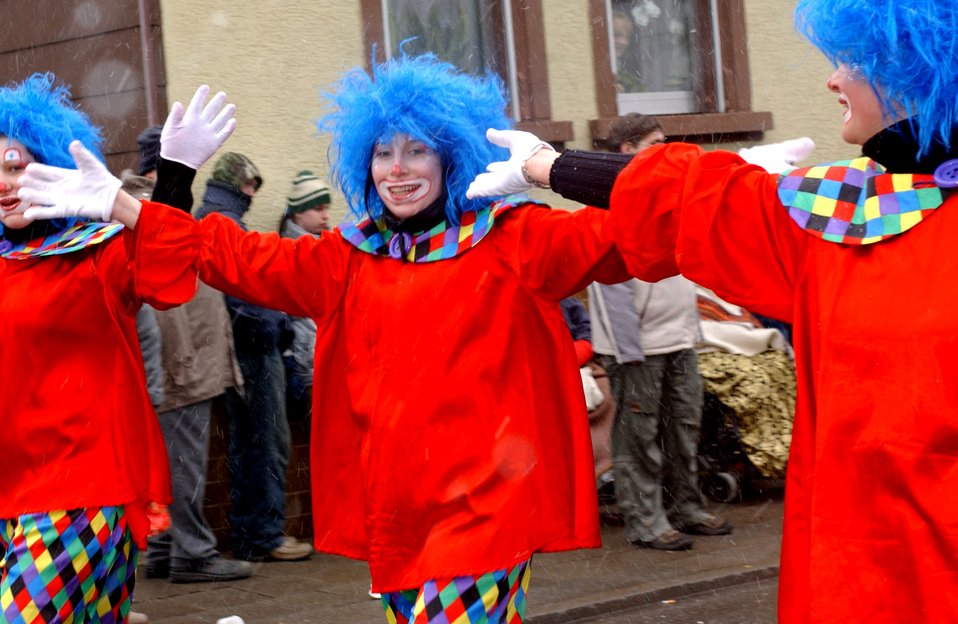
Clowns perform during the Fasching Parade in Ramstein Village, Germany, on Tuesday, Feb. 28, 2006. The parade was initially named and reserved for the Tuesday before Ash Wednesday.